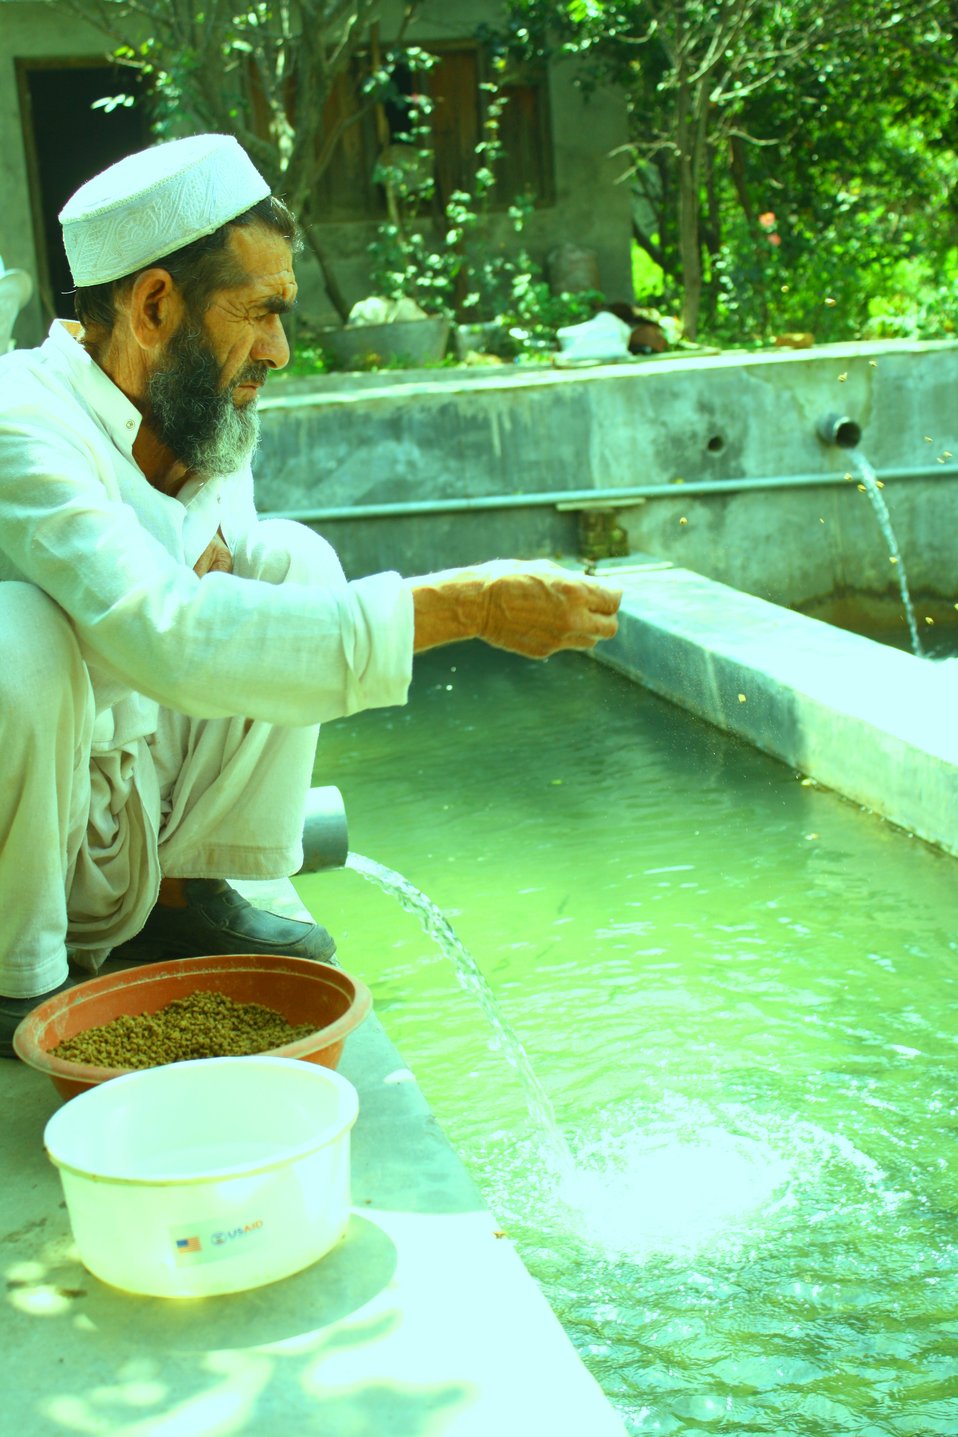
USAID helps rehabilitate hotels and fish farms in battered Swat Valley - 1

A trout farmer feeds trout fingerlings pre-formulated fish feed provided by USAID through the USAID Firms Project. Through this assistance, trout farmers in Swat are harvesting their first trout stock in several years.